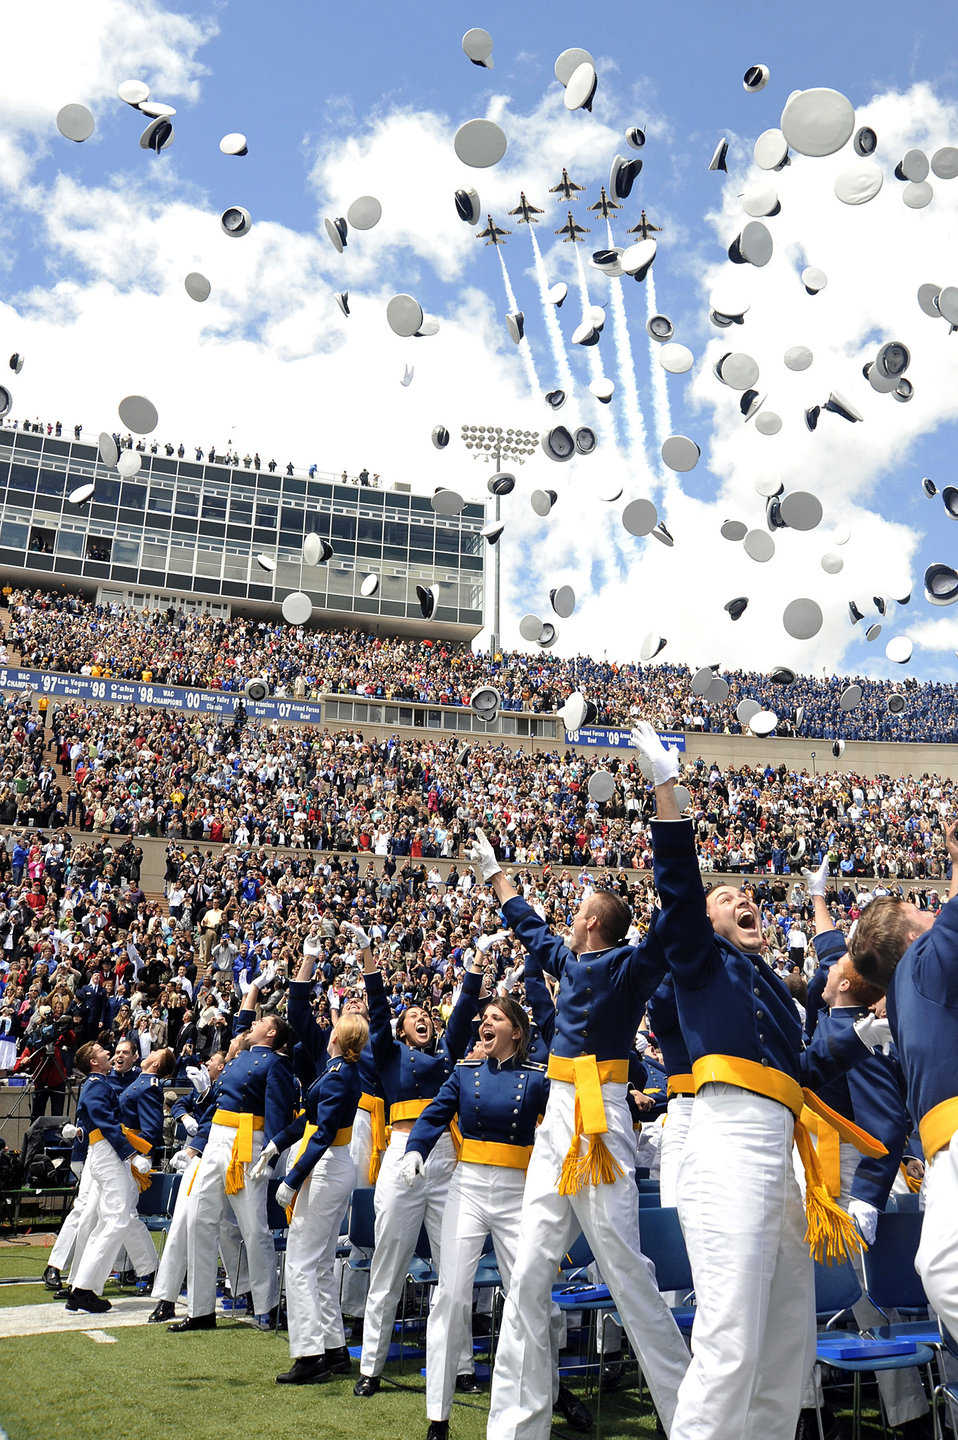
Academy class of 2011

Newly commissioned second lieutenants celebrate at the end of the Air Force Academy's Class of 2011 graduation ceremony May 25, 2011, at Falcon Stadium in Colorado Springs, Colo. More than 1,000 cadets received their diplomas during the commencement.